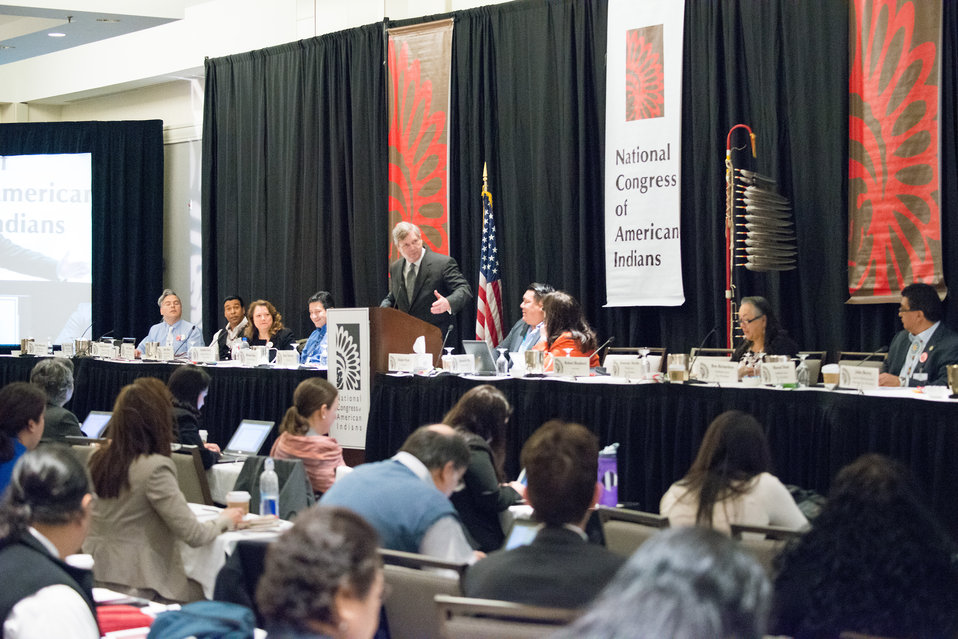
Agriculture Secretary Tom Vilsack addresses the 2014 National Congress of American Indians (NCAI) Executive Council Winter Session at the Westin Washington City Center in Washington, DC on Thursday, March 13, 2014.